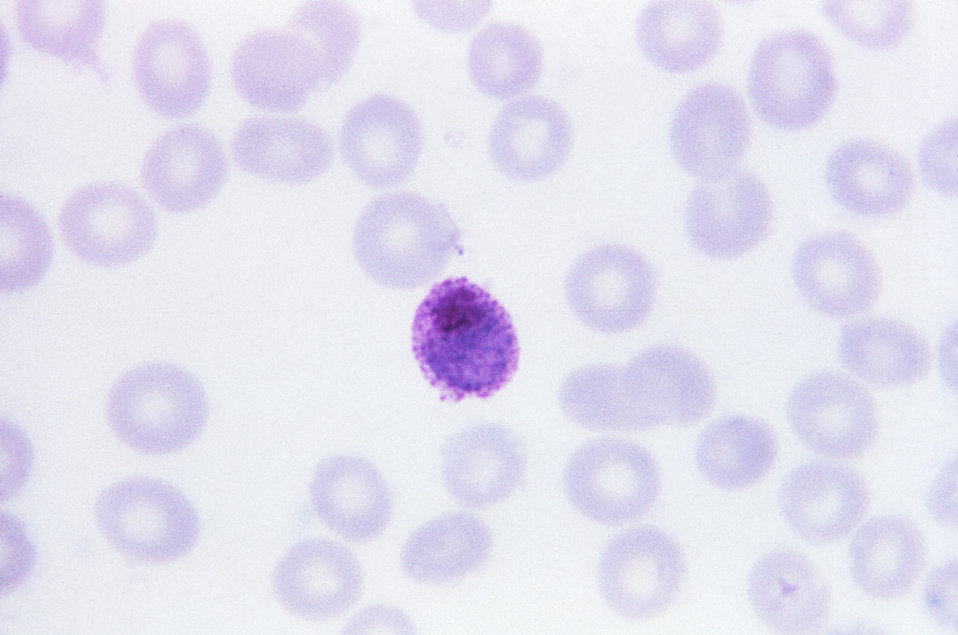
This thin film Giemsa stained micrograph depicts a mature Plasmodium ovale trophozoite.